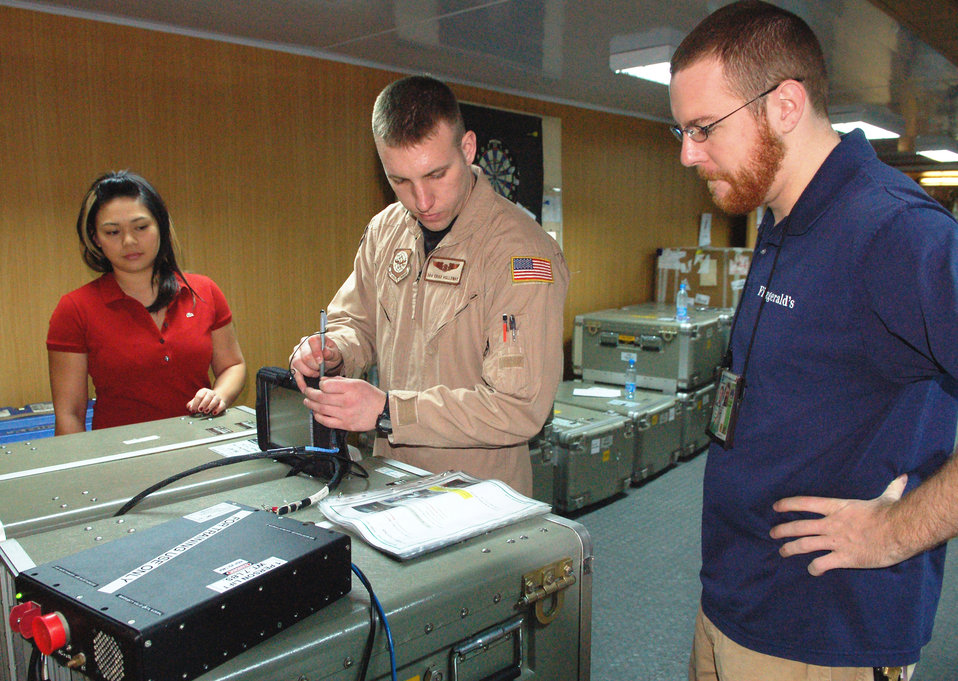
Manas KC-135s revolutionize combat operations

Senior Airman Chad Holloway learns how to boot up and operate the Roll-On-Beyond-Line-Of-Sight Enhancement System from Keith Lareau and Andrina Luczon March 13 at Manas Air Base, Kyrgyzstan. Airman Hollloway is a KC-135 boom operator deployed from the 92nd Air Refueling Squadron at Fairchild Air Force Base, Wash. Ms. Luczon and Mr. Lareau are Northrop Grumman contractors.